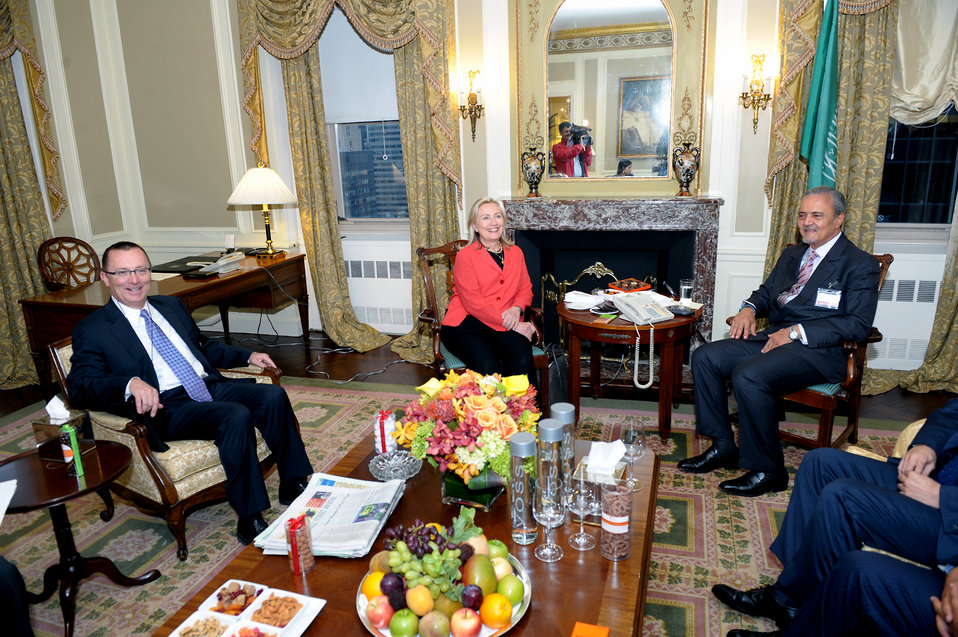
Secretary Clinton Participates Meets With Saudi Foreign Minister Saud al-Faisal

U.S. Secretary of State Hillary Rodham Clinton holds a bilateral meeting with Saudi Foreign Minister Saud al-Faisal at the Waldorf-Astoria in New York, New York, on September 20, 2011.